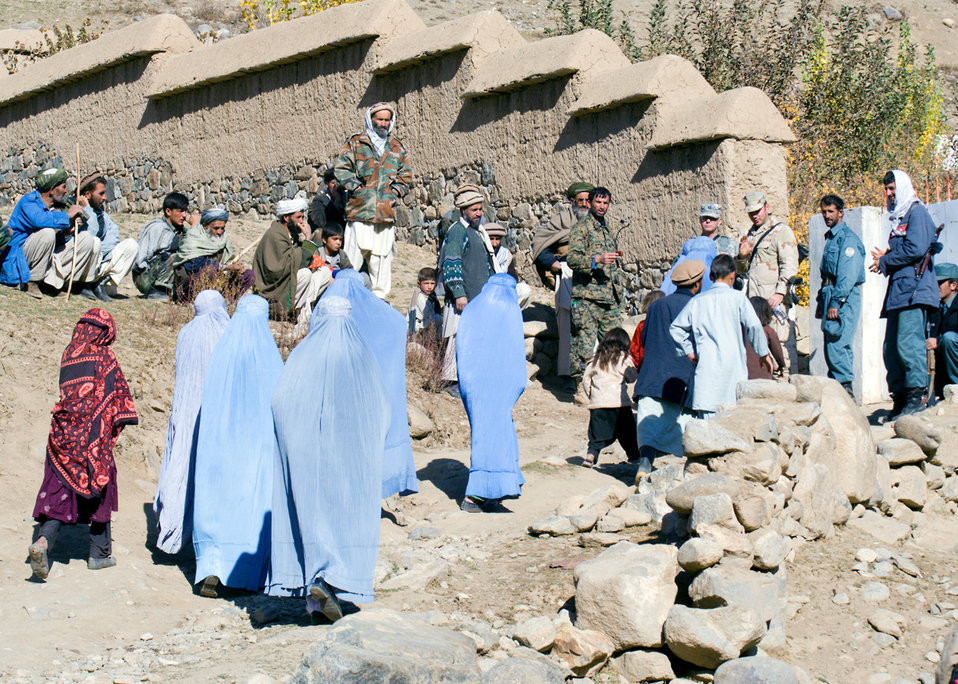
Afghan PRT treats patients, prepares village for winter

The Paryan Basic Health Clinic does not have a physician on staff to meet the needs of the district's 38,000 residents. In all, 421 patients were seen Oct. 28 by the Panjshir PRT's cooperative MEDCAP.